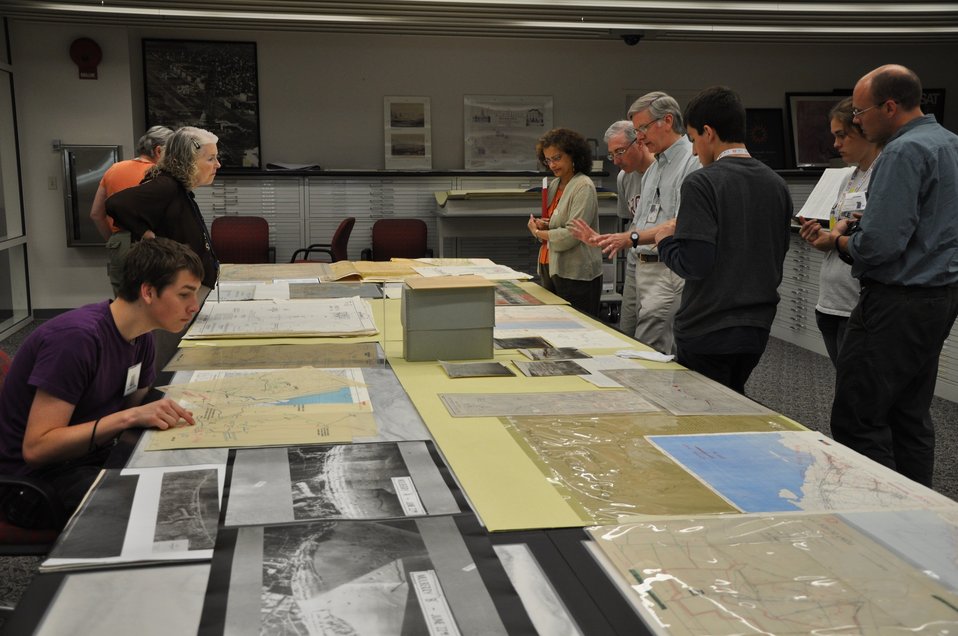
Tour of Aerial Photos & Maps; Location: Archives 2 - Cartographic Research Room, College Park, MD